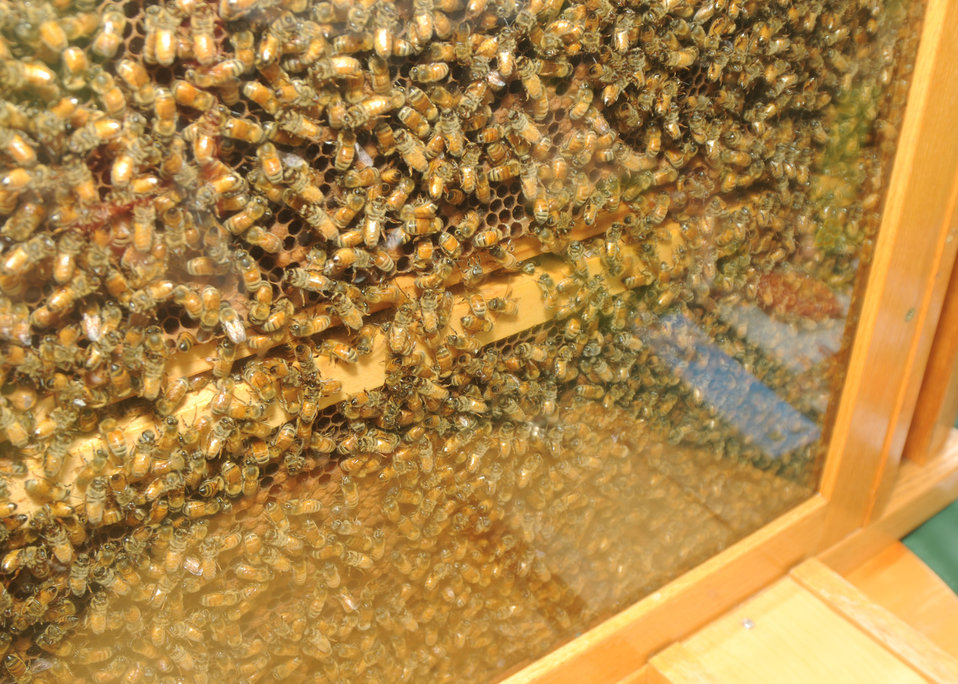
The bees on display at a Healthy Garden Workshop on pollinators.